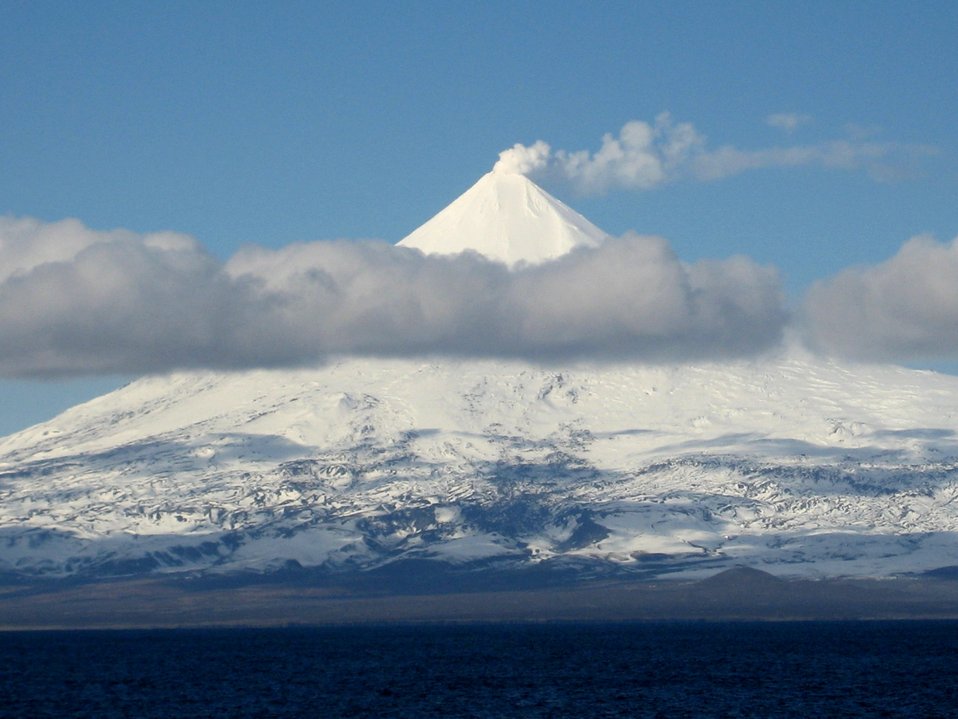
Shishaldin Volcano, one of the great navigational landmarks of Alaska.